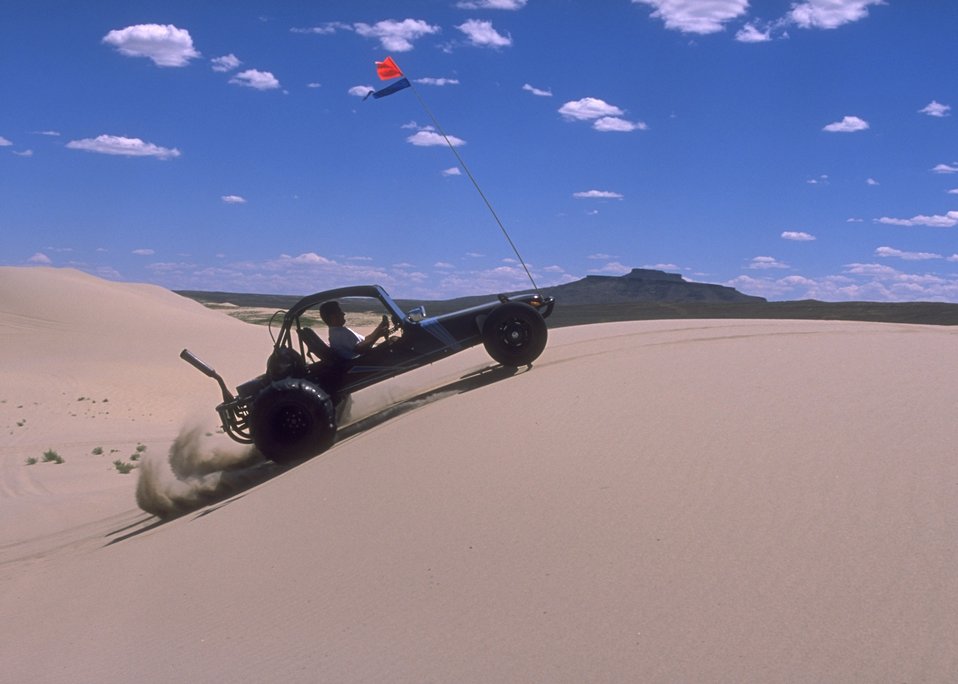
Sand Dunes OHV Area, Rock Springs Field Office.